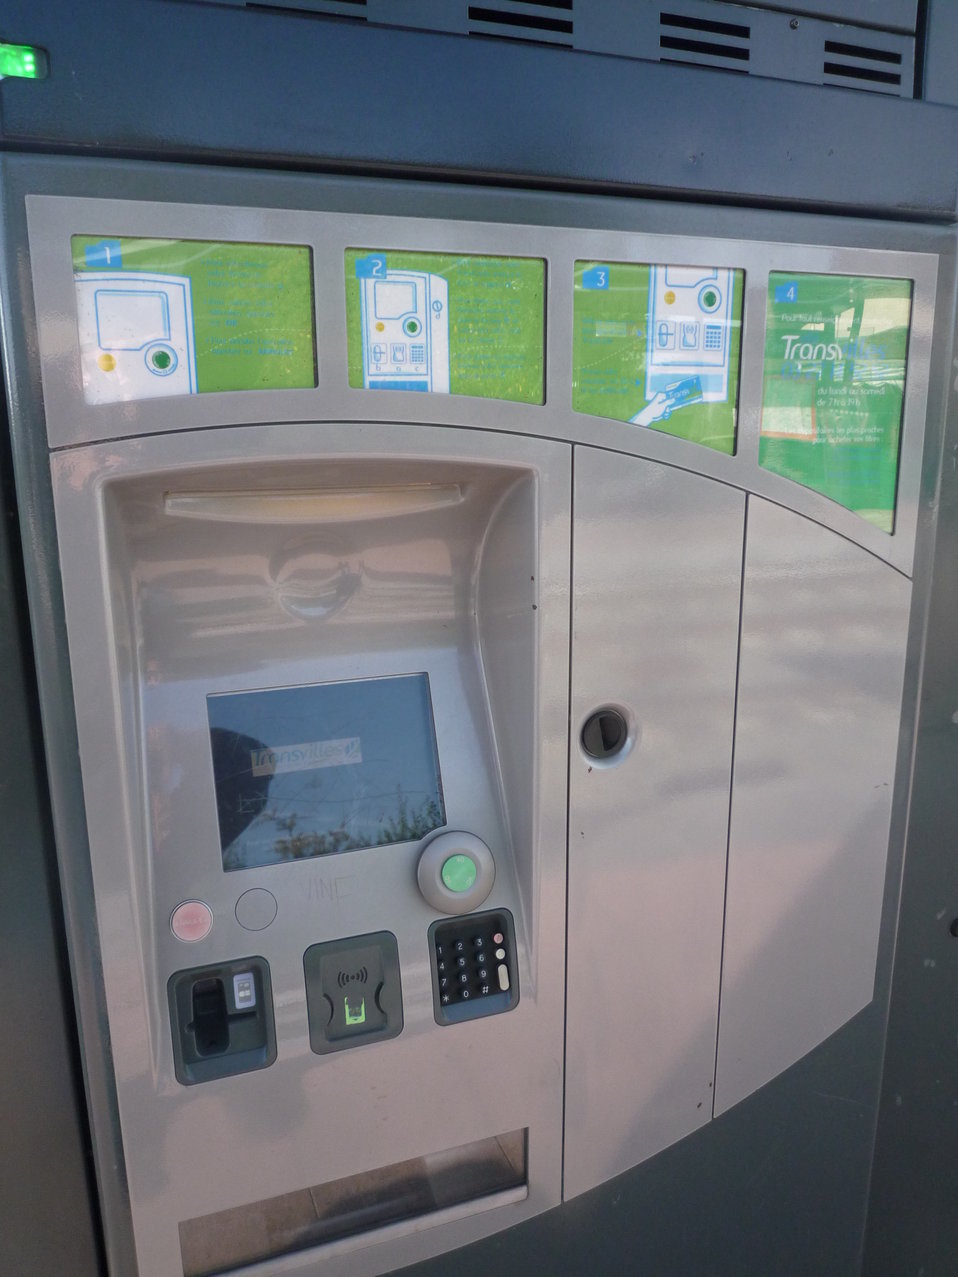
Fran√ßais†: Tramway de Valenciennes, Nord, Nord-Pas-de-Calais, France